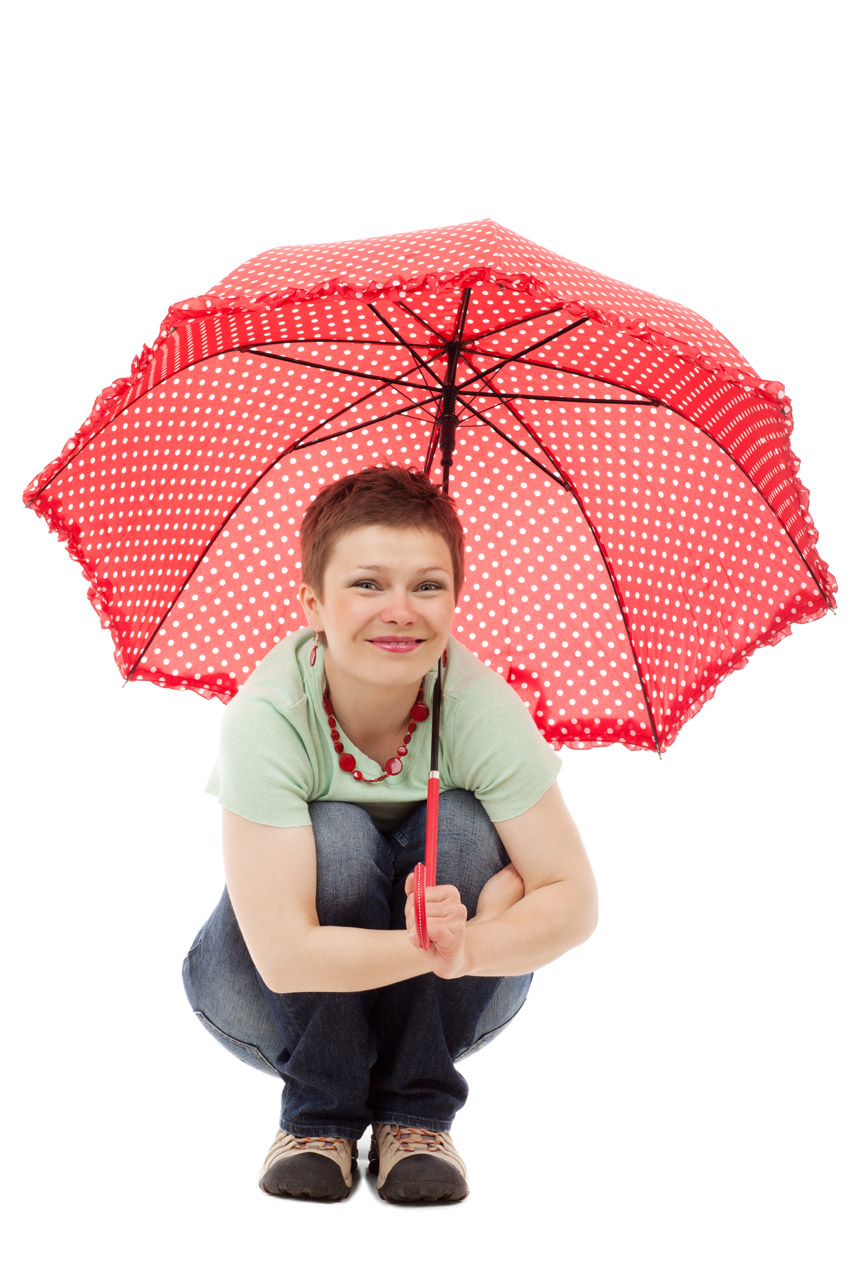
Woman with red umbrella

Young woman in squatting position with red umbrella isolated on white background.